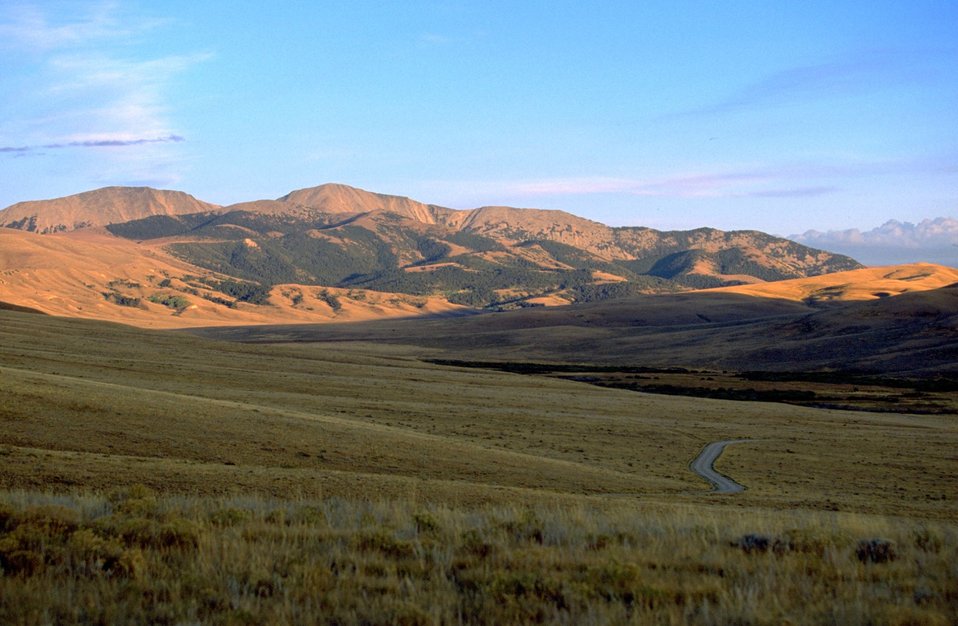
Grassy hills with mountains in the background